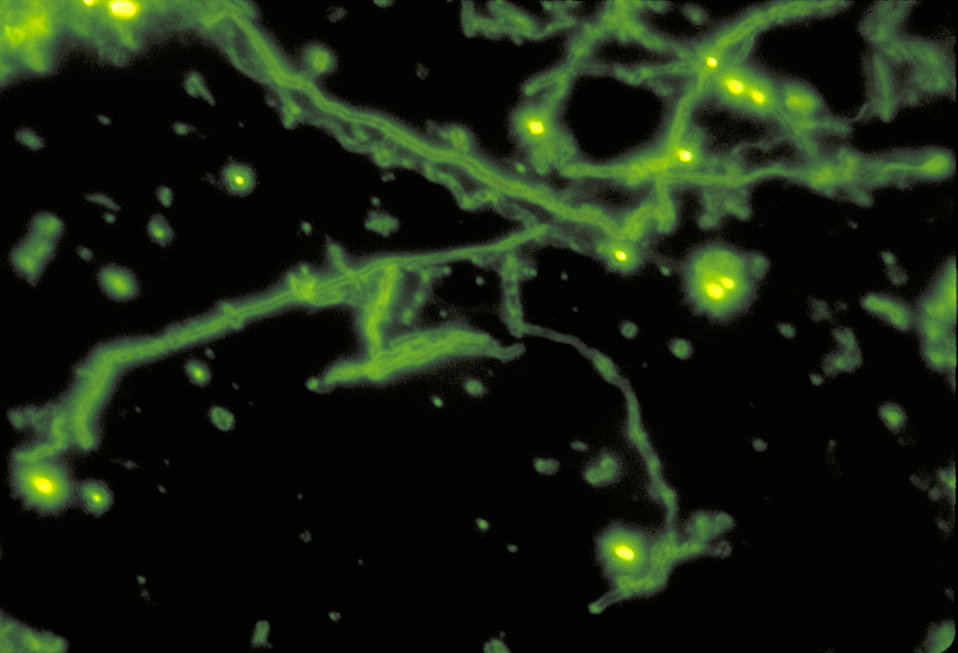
A photomicrograph of Actinomyces naeslundii using an Immunofluorescent Antibody staining technique; Magnified 1187X.